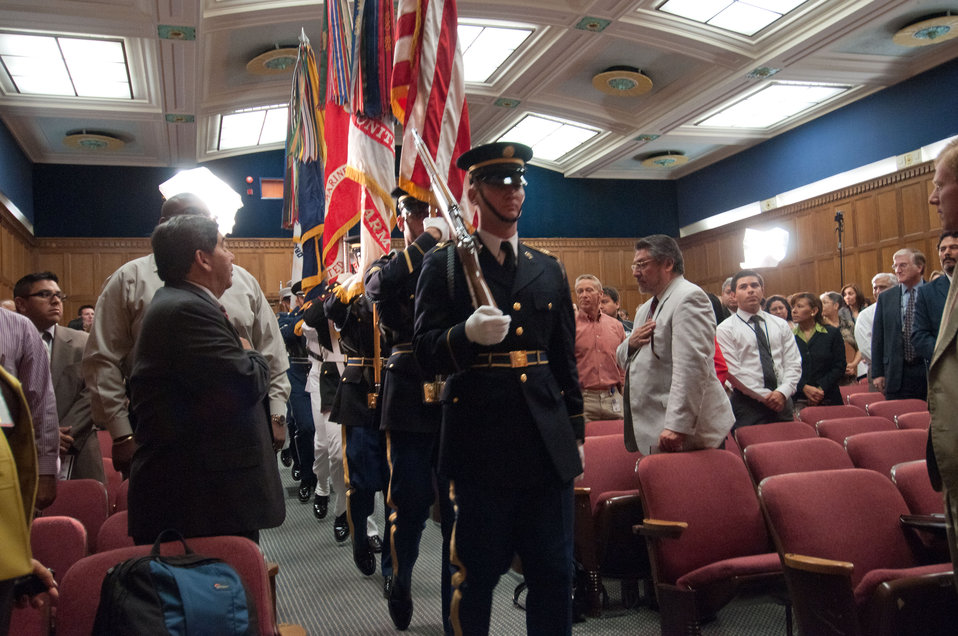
The Military District of Washington Joint Armed Forces Color Guard presented the colors at the start of the National Hispanic Heritage Month observance at the United States Department of Agriculture (USDA), in the Jefferson Auditorium, in Washington, D.C. on Thursday, September 15, 2011.